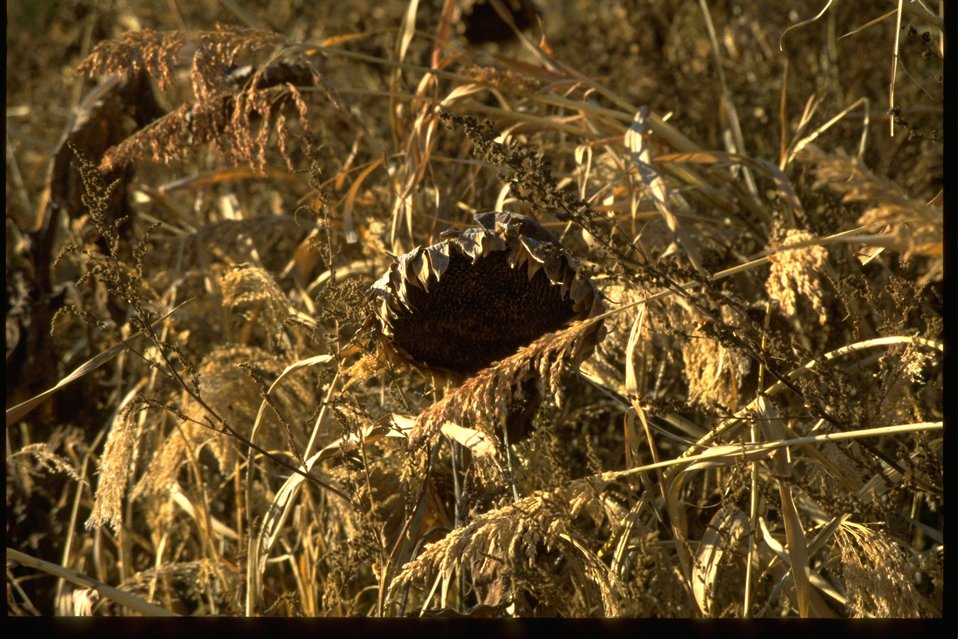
Wild grain and sunflower field in the John Day River area.